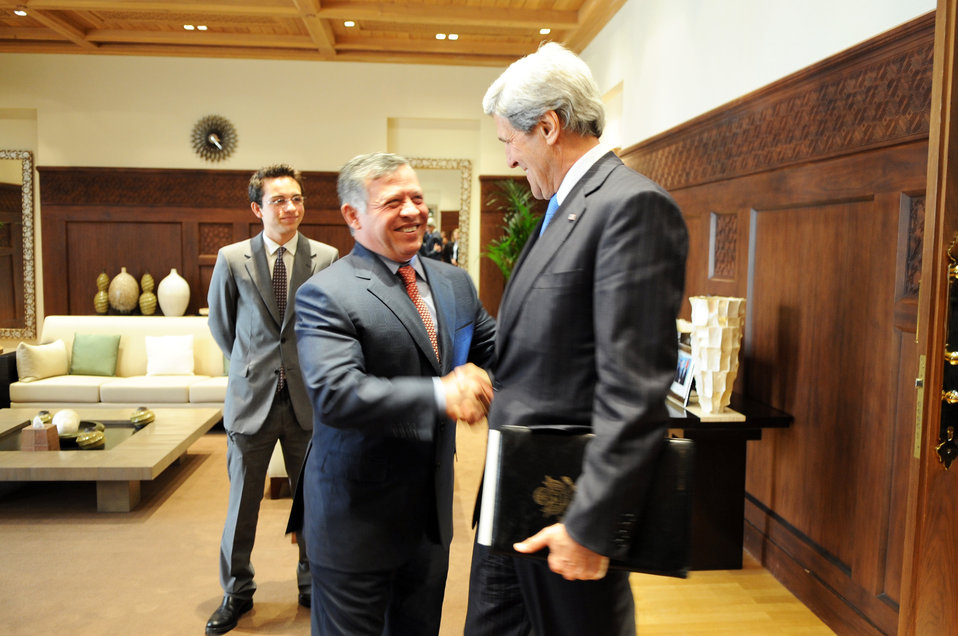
Secretary Kerry Is Greeted By Jordanian King Abdullah II

With Crown Prince Hussein bin Abdullah looking on, U.S. Secretary of State John Kerry is greeted by Jordanian King Abdullah II at Al Hummar Palace in Amman, Jordan, on May 22, 2013.